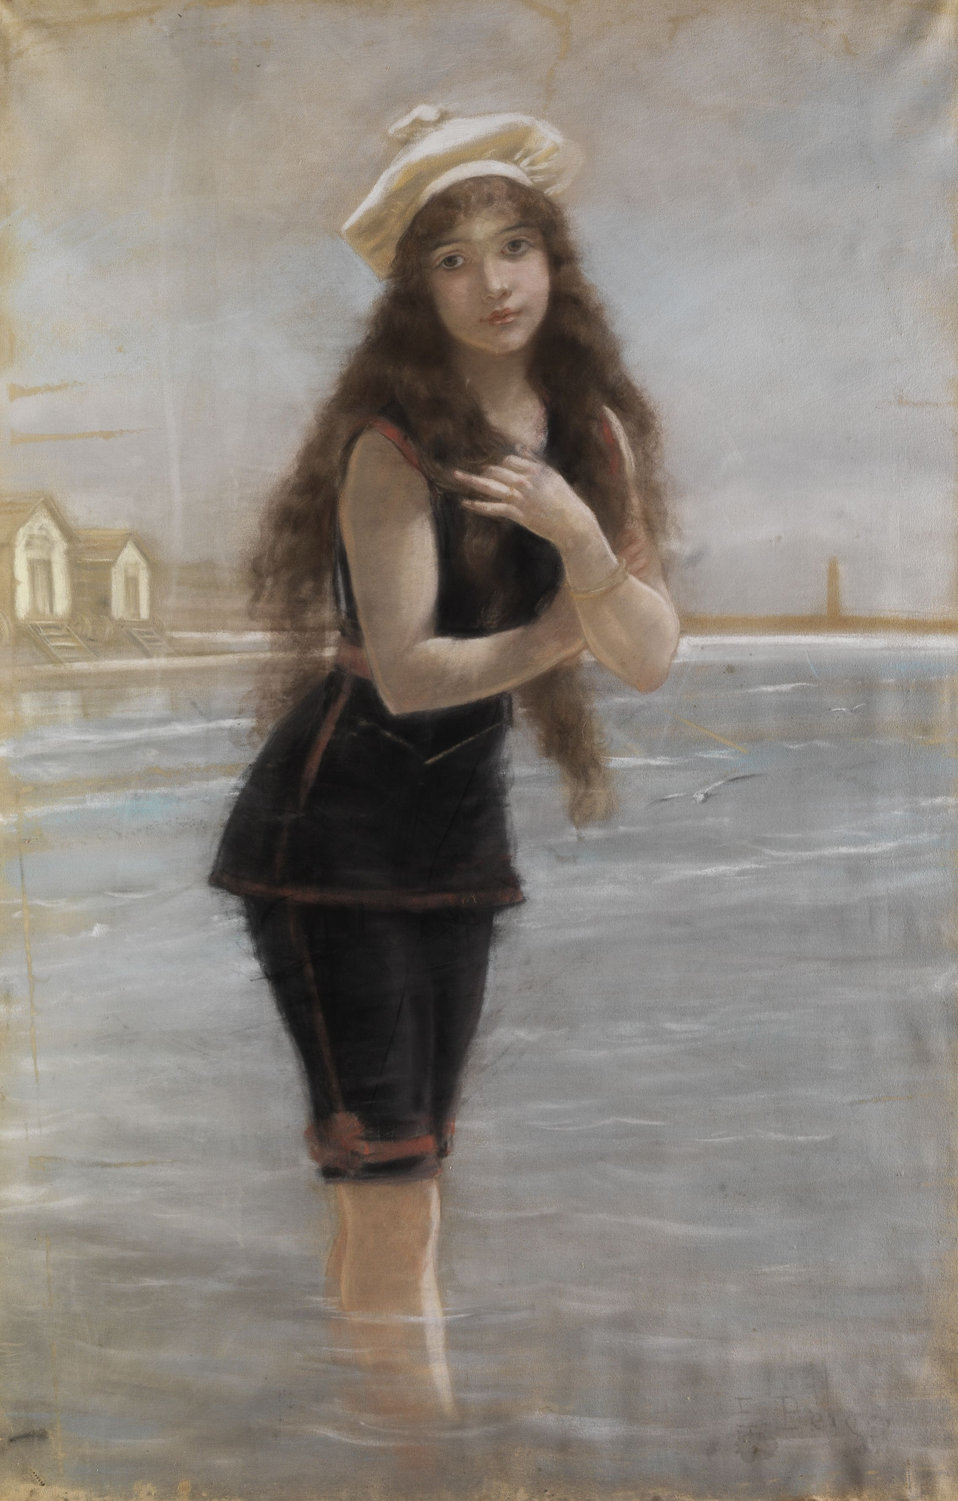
Ernst Berger Strandschönheit